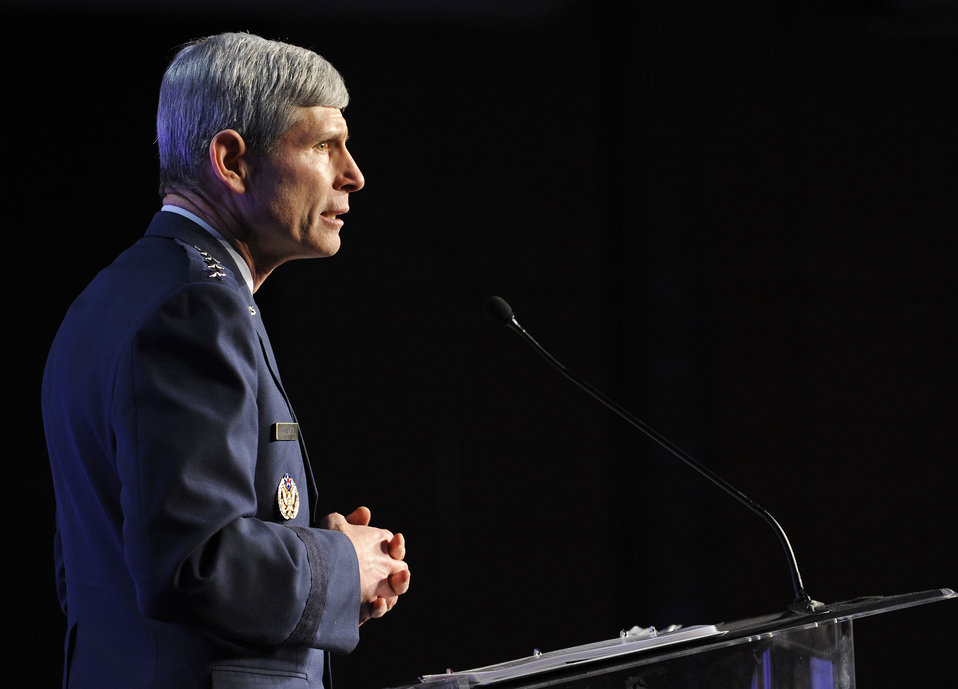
Black Engineer of the Year Awards

Air Force Chief of Staff Gen. Norton Schwartz gives the keynote address on Feb. 19, 2010, at the 5th Stars and Stripes tribute dinner, which is part of the 24th Annual Black Engineer of the Year Awards Conference being held Feb. 18 to 20 in Baltimore. This year's tribute dinner's theme is Saluting the Role of Our Military. The conference seeks to recognize a growing cadre of diverse professionals who are contributing to America's competitiveness and serving as role models to historically underrepresented groups in the sciences. General Schwartz emphasized that in order to maintain the world's best Air and Space force it is imperative to attract, recruit, train and retain the skilled scientists and engineers needed to create tomorrow's aerospace leaders.